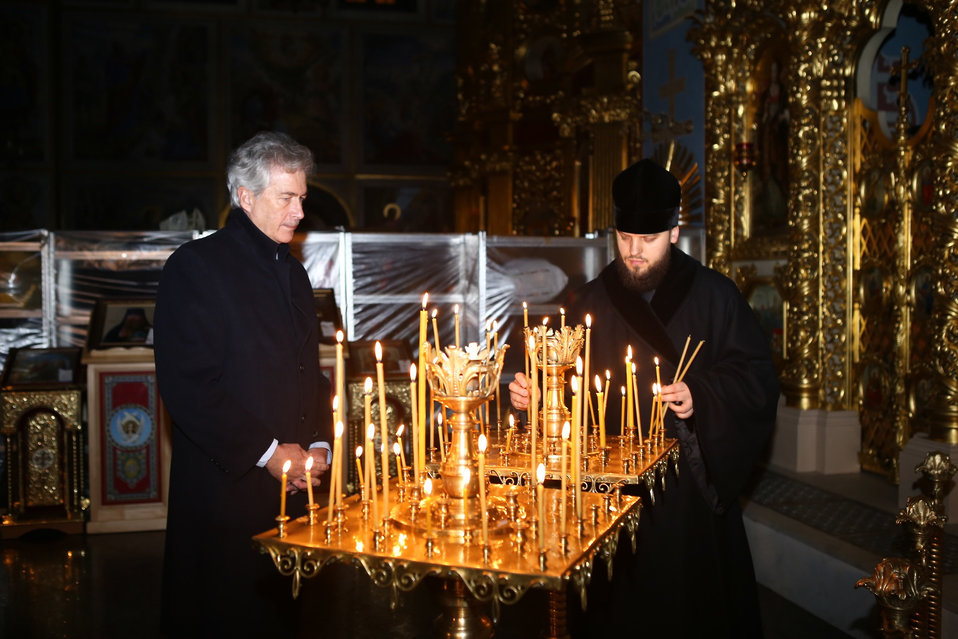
Deputy Secretary Burns Visits St. Michael's Cathedral

Deputy Secretary of State Bill Burns visits St. Michael’s Cathedral, where he meets with Maidan medics, civil society representatives, and religious leaders in Kyiv, Ukraine, on February 25, 2014.